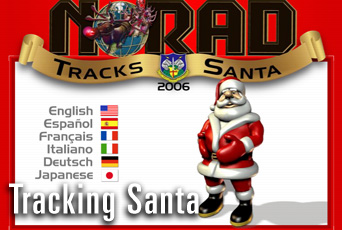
NORAD Tracks Santa

Santa's fans can track his journey around the world on Dec. 24 at North American Aerospace Defense Command's special Web site www.noradsanta.org.The site also features the history of NORAD Tracks Santa program, has interactive games and more.